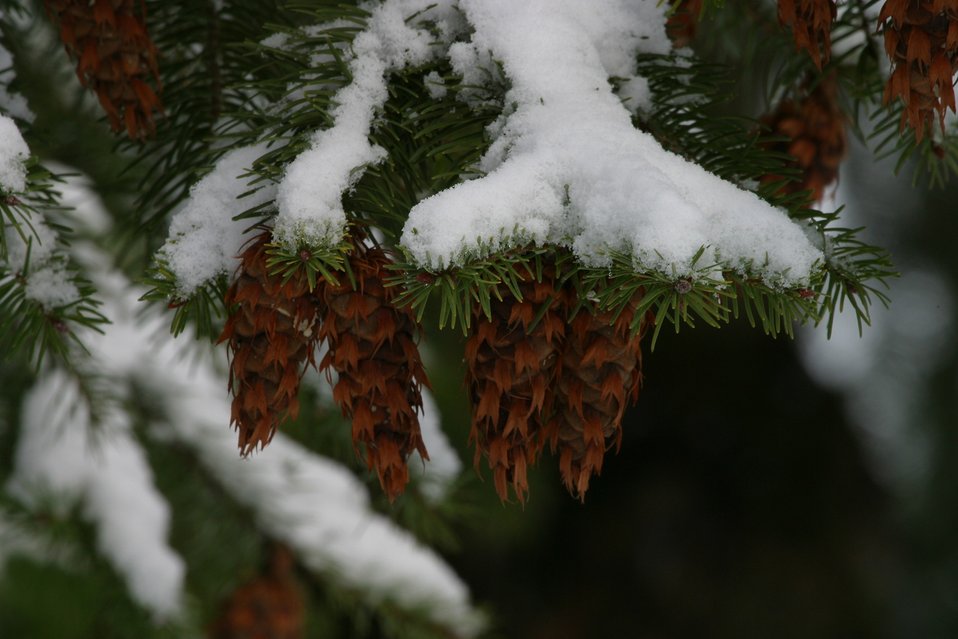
Snow and ice on Douglas Fir Bows and cones during the storm of January 2004.